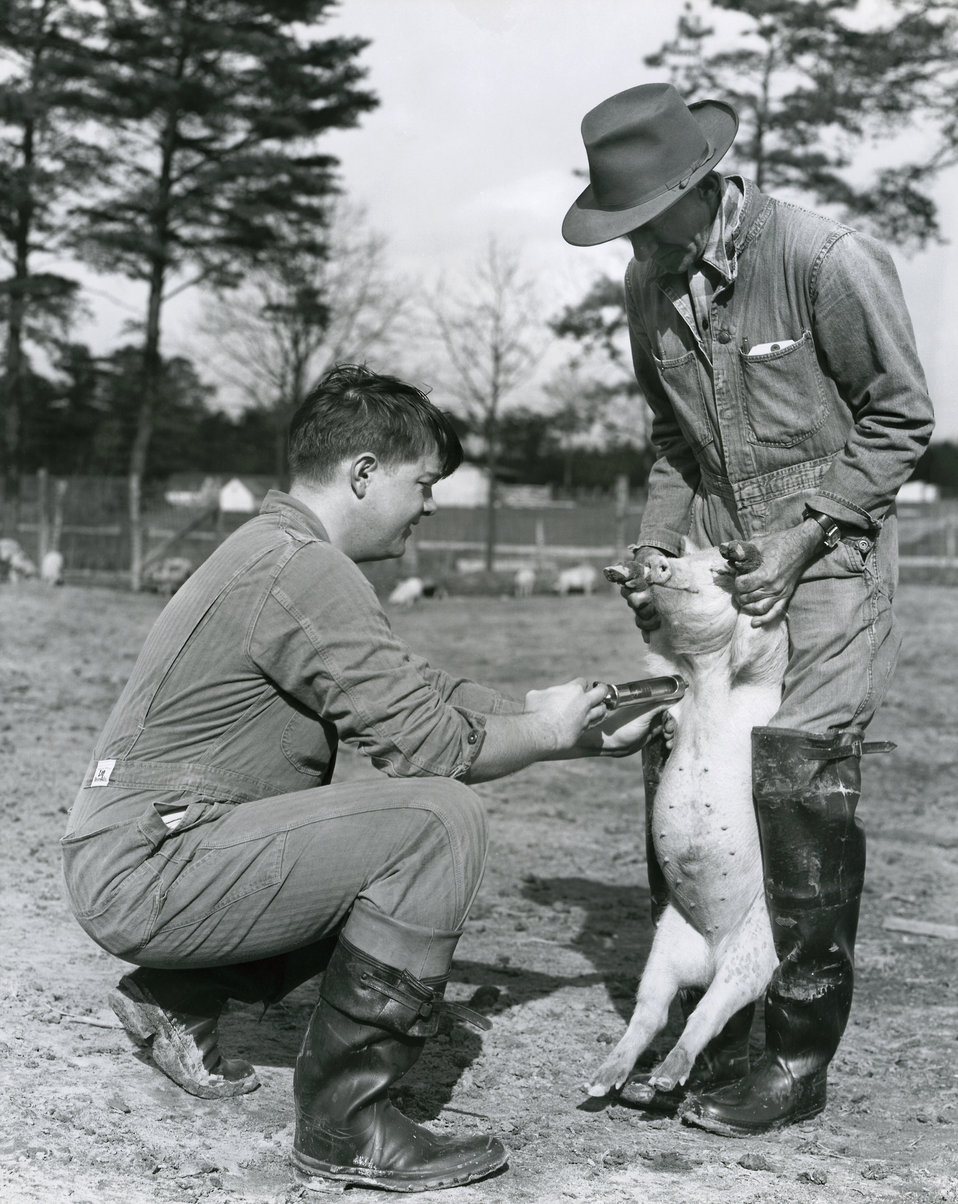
The first practical preventive measure, injection of anti-hog-cholera serum and then the virus, was successfully tested in 1907 by the U.S. Department of Agriculture's (USDA) Bureau of Animal Industry (BAI) field station near Ames, Iowa. Secretary Bob Bergland declared the United States hog cholera free on January 31, 1978. This was 99 years after USDA began hog cholera research and 17 years after the start of a Federal-State eradication campaign. Hog cholera was first reported in the United States in 1833 in southern Ohio. By 1893, 90 separate areas of infection were known to exist. Outbreaks in 1886, 1887, and 1896 each killed more than 13 percent of the Nation's hogs and more than 10 percent died during the 19l3 outbreak. The disease was still costing producers $50 million a year in the early 1960's.